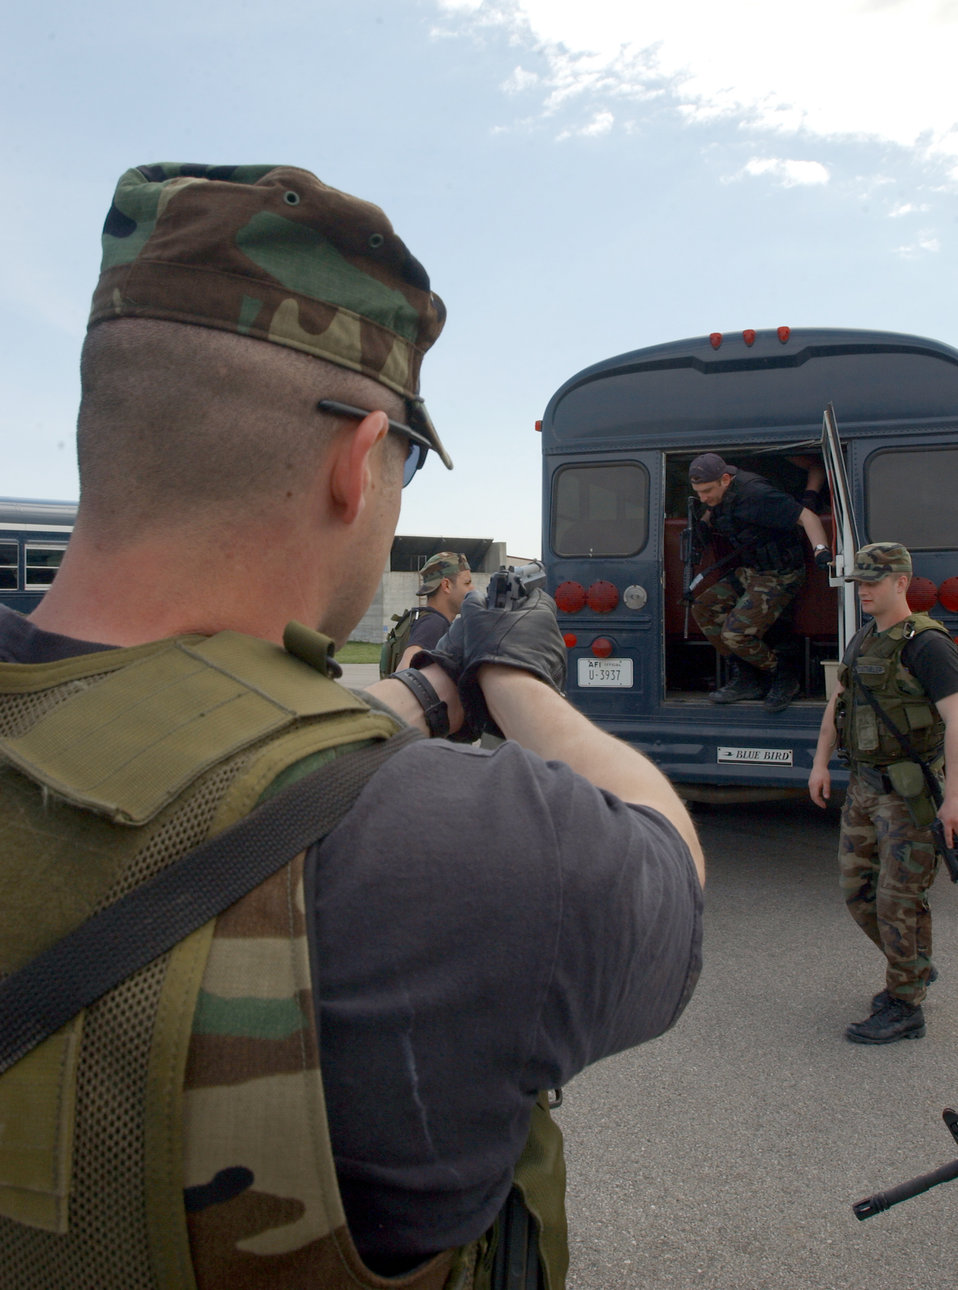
Joint tactics

AVIANO AIR BASE, Italy -- Security forces Airmen with the 31st Security Forces Squadron conduct vehicle assault training as part of a joint-tatics training course here April 21. The week-long course was developed to establish a better working relationship between members of the Office of Special Investigations, the 31st SFS, and the Italian air force carabinieri.